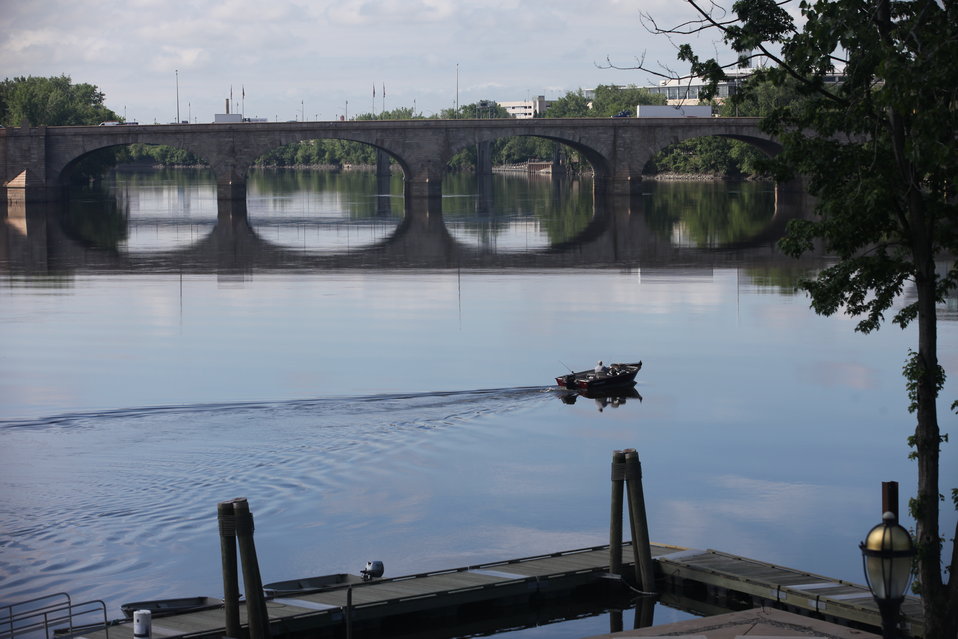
River view with boater

View from the Connecticut River Community Boathouse, site of the Department of Interior Blueway designation signing event held on May 24, 2012. The Connecticut River is the first river in the nation to be named a 'Blueway'.